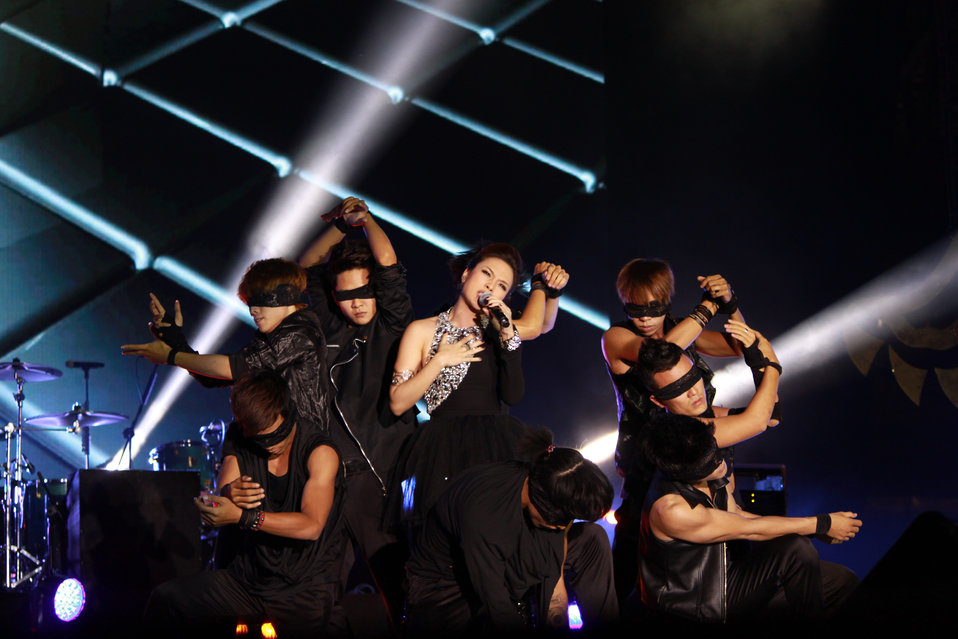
My Tam, MTV EXIT’s new Celebrity Ambassador to Vietnam, encourages fans to spread the awareness on human trafficking

A great concert that attracts 40,000 fans in My Dinh Stadium in Hanoi with strong messages against human trafficking.